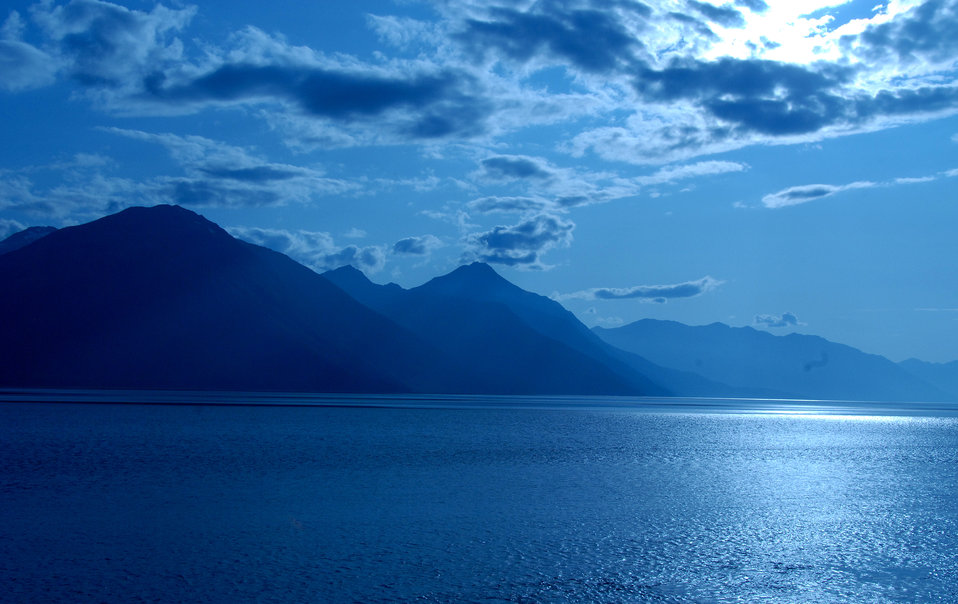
Rural Tour 0001